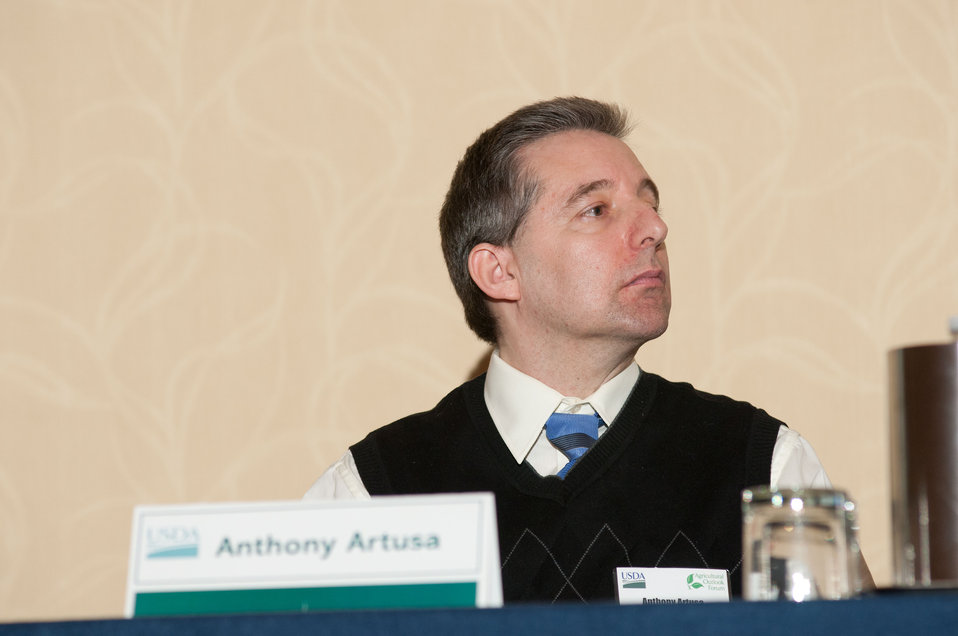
National Center for Weather and Climate Prediction - Climate Prediction Center’s Anthony Artusa, during the U.S. Department of Agriculture (USDA) 2013 Agricultural Outlook Forum held at the Crystal Gateway Marriott Hotel in Arlington, VA on Friday, Feb. 22, 2013. The breakout session is generally focused on the Weather Outlook for 2013. The presentation is available at www.usda.gov/oce/forum/presentations/Artusa.ppt.